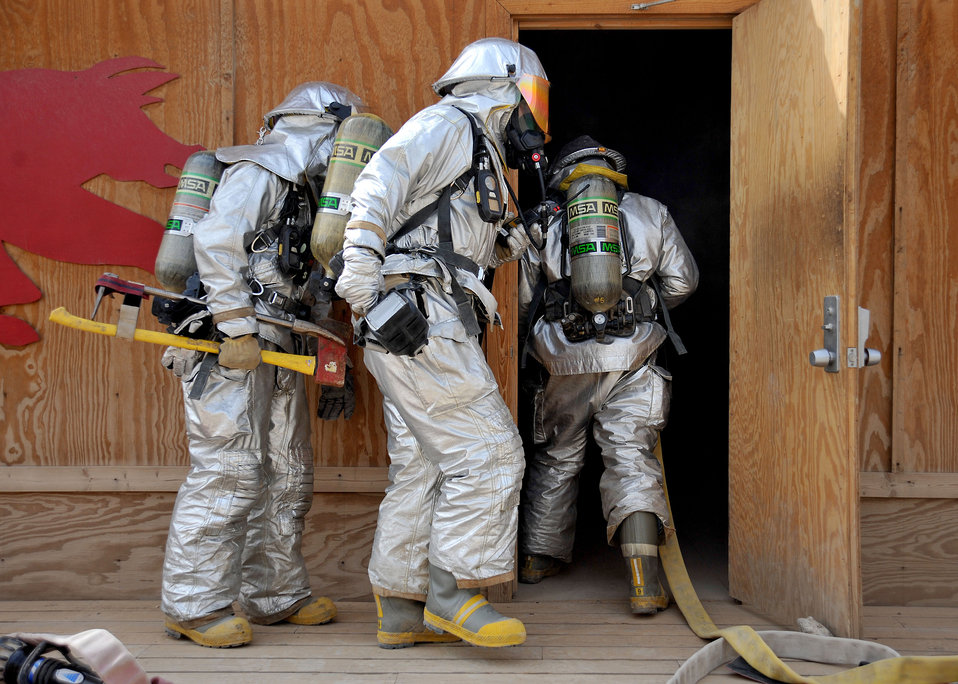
Air Force firefighters provide fire and emergency services on Ali Air Base, Iraq.